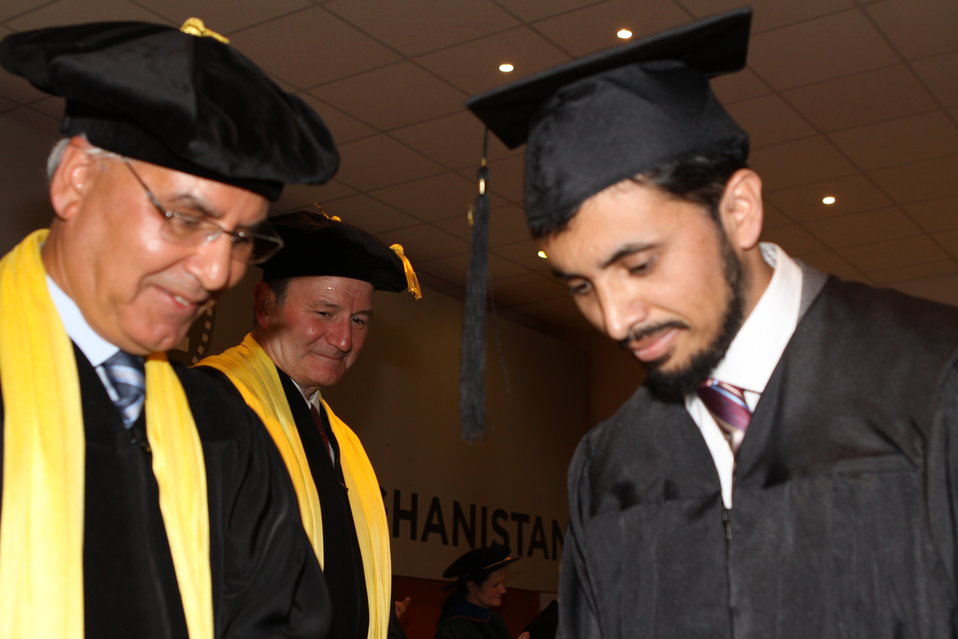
100526 AUAF Graduation 265